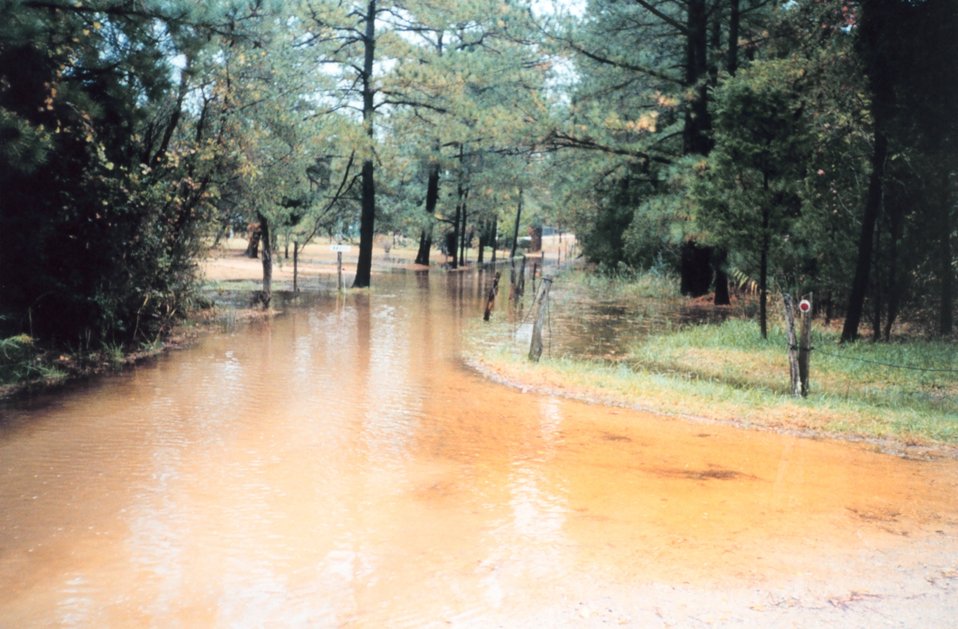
Flooding of low-lying areas by extreme high tides. If sea level continues its rise, such events will become increasingly common.